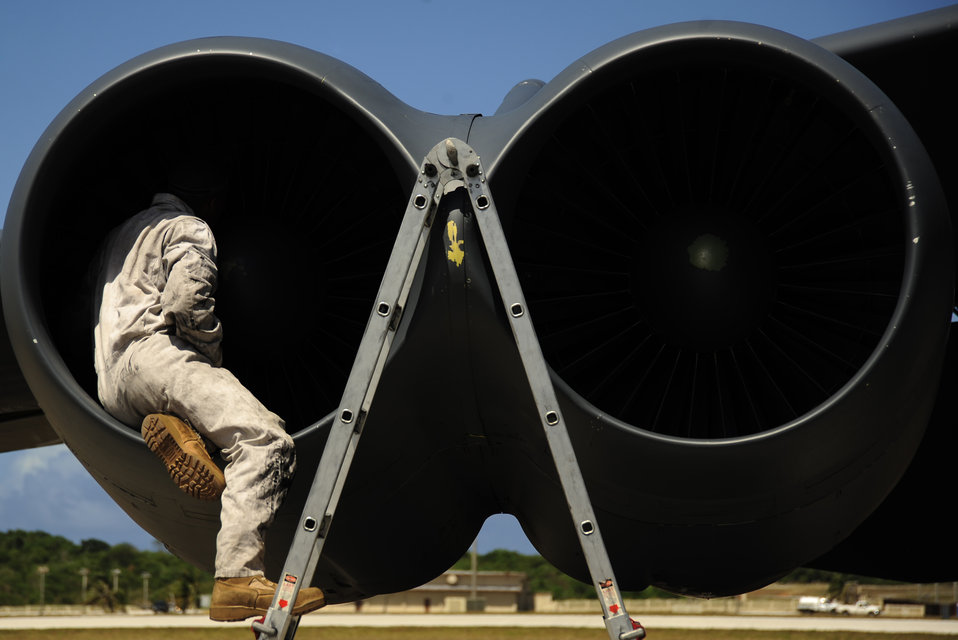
Taking a close look

Staff Sgt. John League performs post a flight check on a B-52 Stratofortress after a mission in support of Exercise Cope North Feb. 15, 2010, at Andersen Air Force Base, Guam. The U.S. Air Force and the Japan Air Self-Defense Force conduct Cope North annually at Andersen AFB to increase combat readiness. Sergeant League is deployed from Barksdale AFB, La.